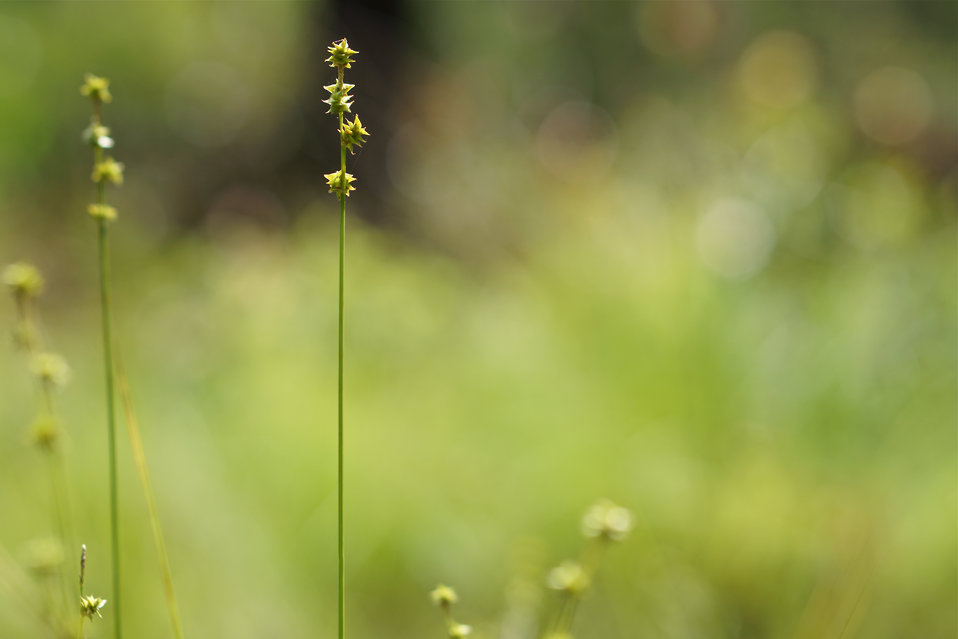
Sedge seed head

In May, bog conservationists from Tennessee, North Carolina, and Georgia convened in the north Georgia mountains for the spring, 2014 meeting of the Bog Learning Network. The event provided an opportunity for biologists to see, first hand, the result of management efforts at two north Georgia bogs. More importantly, the outings provided an opportunity to share innovative approaches to bog management, such as the role of the Georgia Plant Conservation Alliance in conserving rare plants and coordinating a cadre of volunteers to work on bog management.

The Bog Learning Network was convened in the winter of 2013 as a way to bring together people working for bog conservation across the Southern Appalachians. Southern Appalachian bogs are one of North America’s rarest habitats and home to many rare plants and animals.